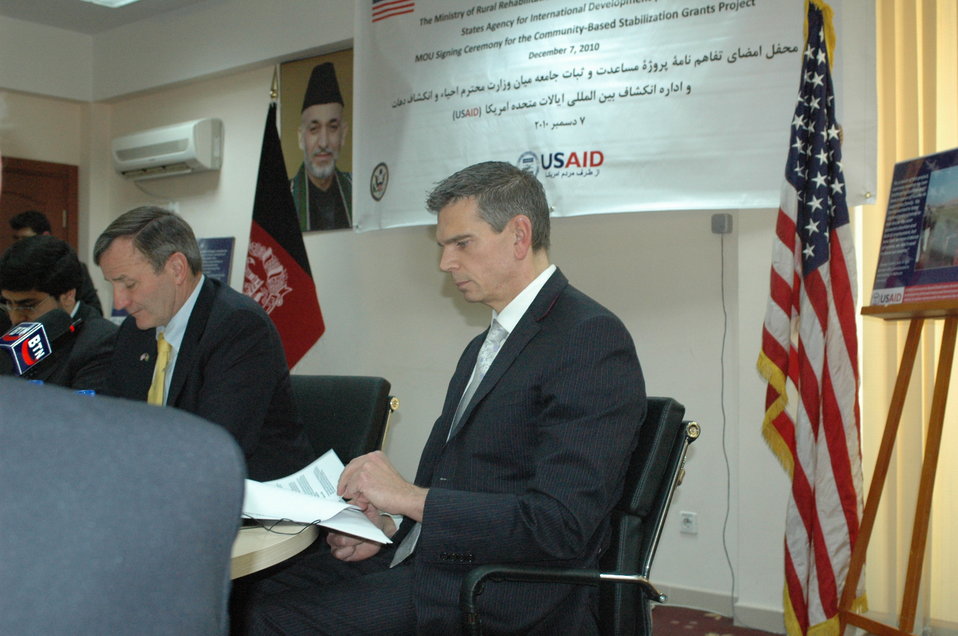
Community Based Stabilization Grants Ceremony, December 7, 2010